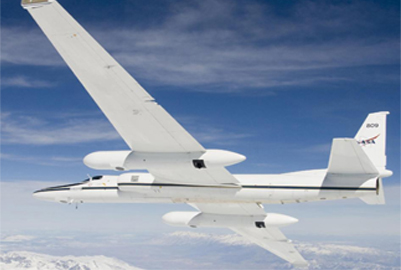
ER-2